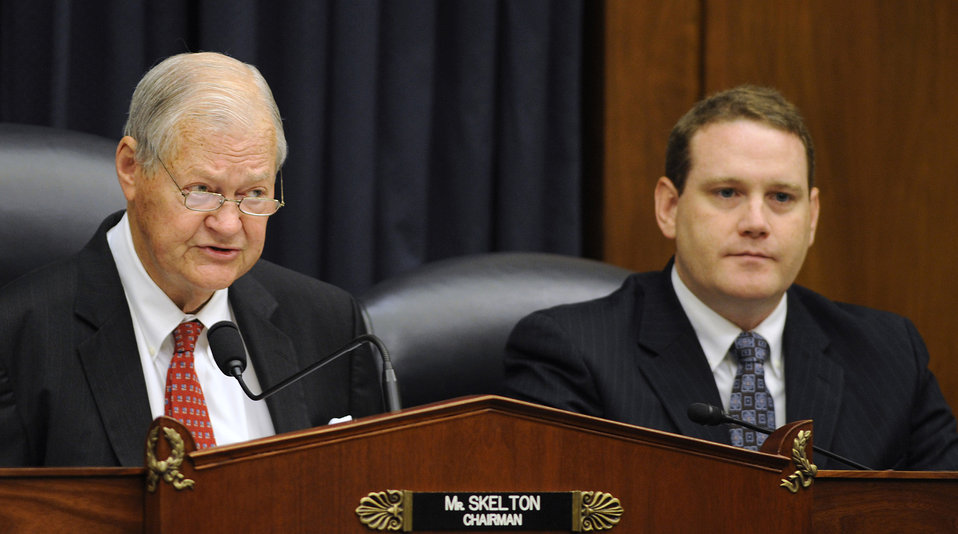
Air Force undersecretary testifies about efficiences before House committee

Ike Skeleton (left), the House Armed Services Committee chairman, participates in a discussion on